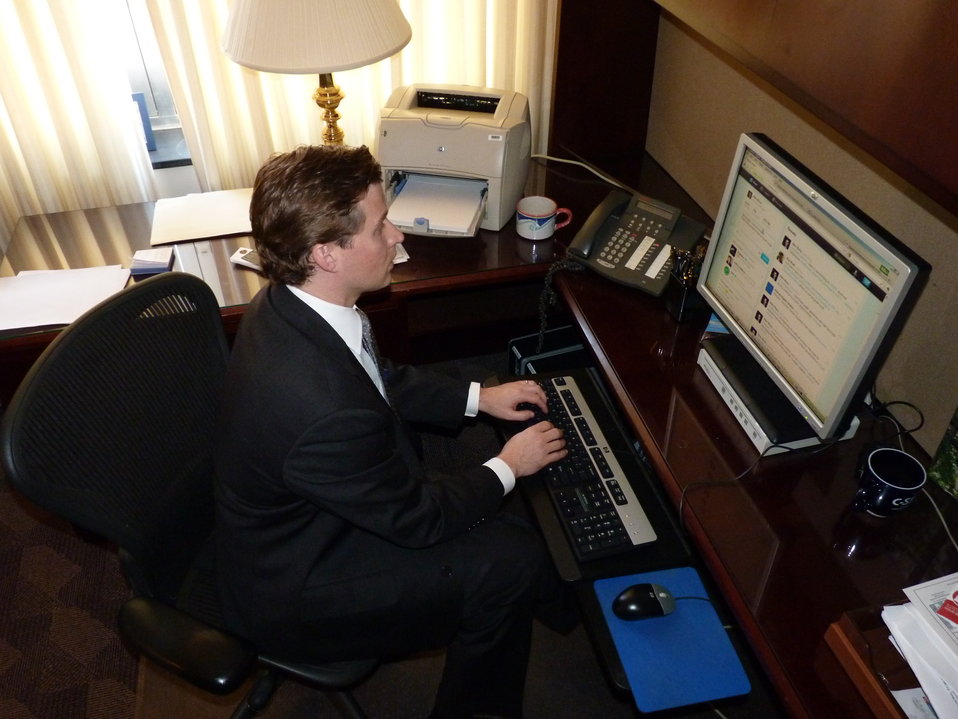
Senior Advisor Alec Ross, @AlecJRoss, Responds to #AskAlec Questions on Twitter

Alec Ross, U.S. Secretary of State Hillary Rodham Clinton's Senior Advisor for Innovation, responds to #AskAlec questions on his account, @AlecJRoss, during a Twitter Q&A session on January 19, 2012. The U.S. Department of State has designated January 2012 as 21st Century Statecraft month.